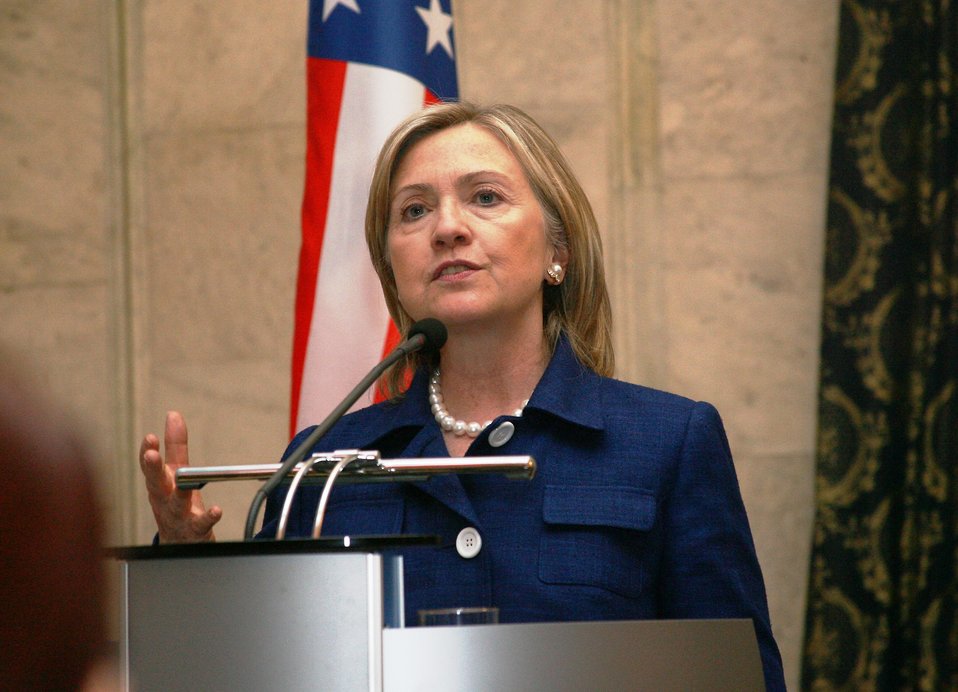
Secretary Clinton Responds to Questions After Meeting With Ukrainian Foreign Minister

U.S. Secretary of State Hillary Rodham Clinton responds to questions after meeting with Ukrainian Foreign Minister Kostyantyn Gryshchenko in Kyiv, Ukraine, on July 2, 2010.